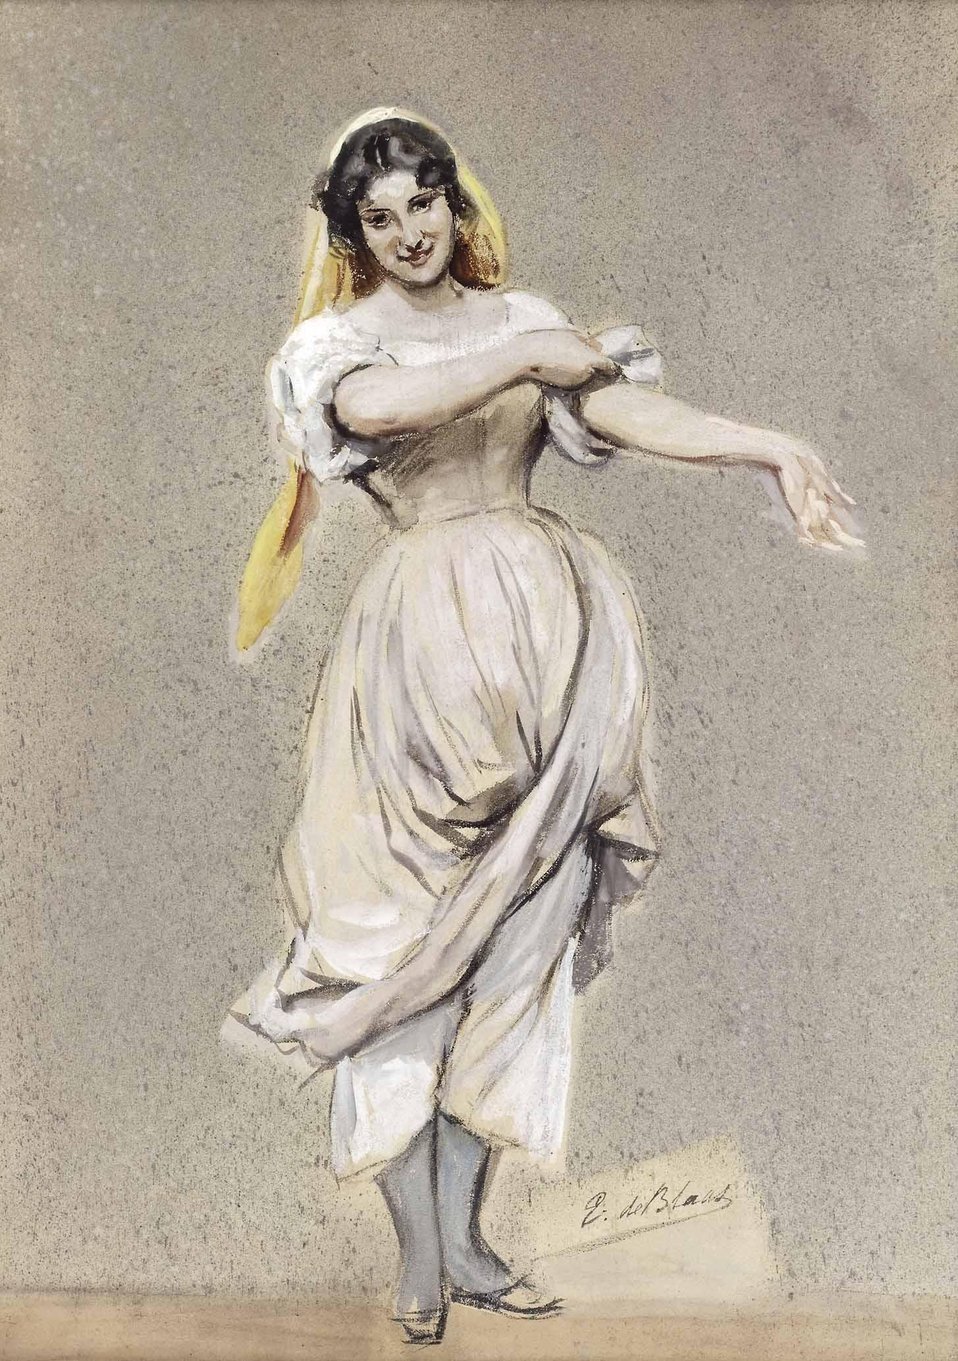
Deutsch: Junge venezianische Wäscherin. Vorzeichnung für das Gemälde vom Jahr 1899; unten signiert: E. de Blaas, Aquarell, Deckweiß auf Papier, 63,5 x 45 cm